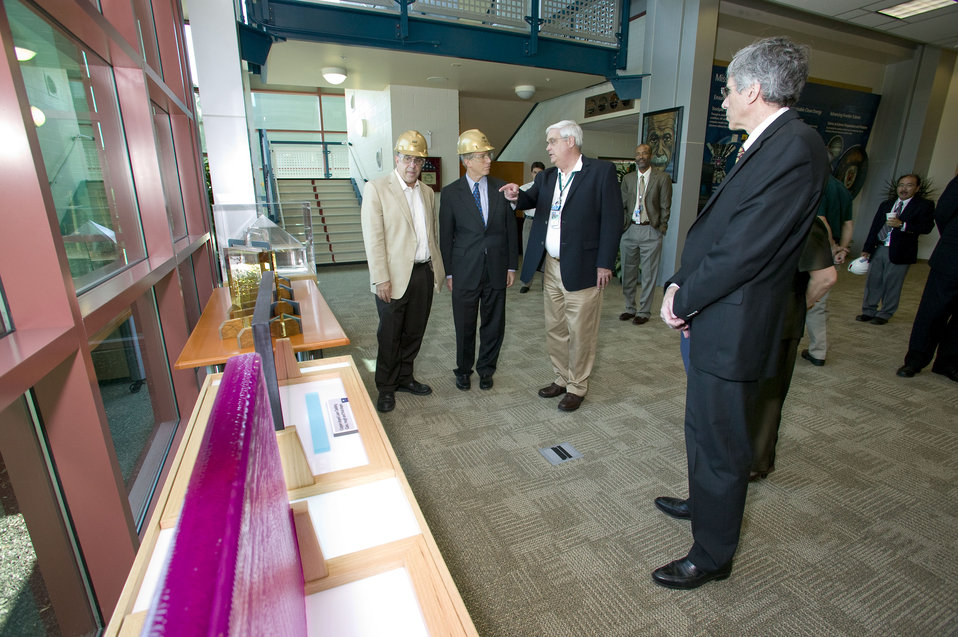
Deputy Secretary of Energy Daniel Poneman

Director George Miller talks about the different optics used at the NIF
facility.